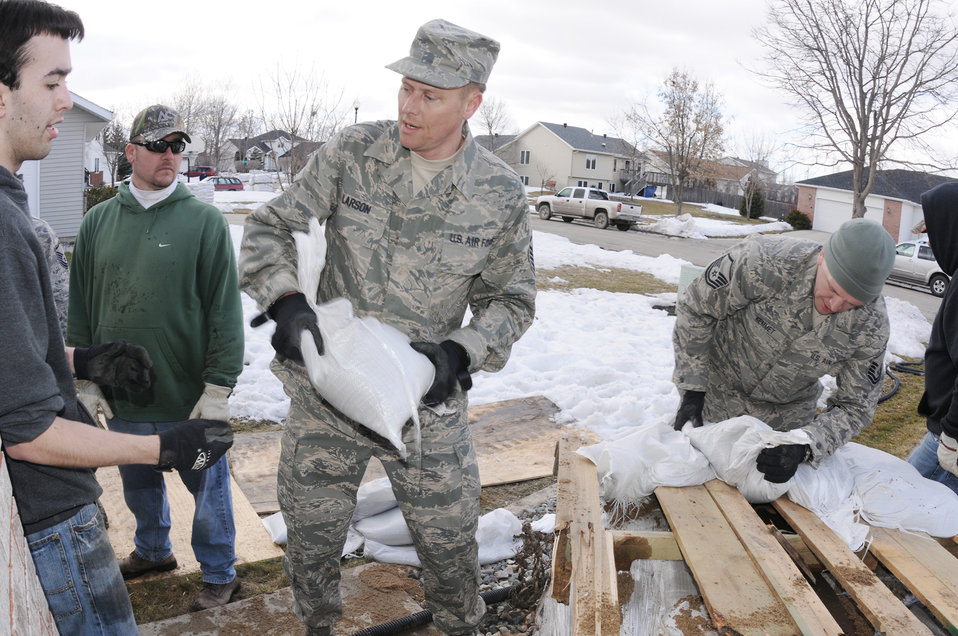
Fighting rising water in Fargo

Master Sgt. David Larson (center) and Master Sgt. Kyle Kemmet pass sandbags along a human chain along with volunteers March 16, 2010, in the River Vili area of Fargo, N.D. They are passing the sandbags to the backyard of homes in an effort to build a flood barrier to the rising water of the Red River along the North Dakota and Minnesota border. Both Airmen are assigned to the North Dakota Air National Guard's 119th Logistics Readiness Squadron.